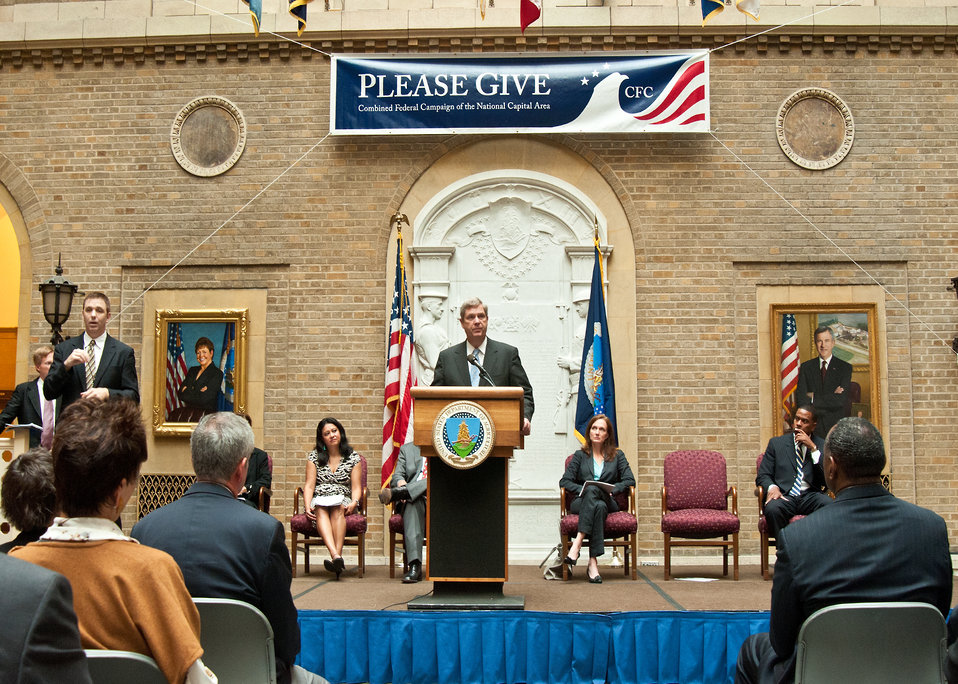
Agriculture Secretary Tom Vilsack welcomes U.S. Department of Agriculture employees to the kick-off of the USDA 2011 Combined Federal Campaign “Compassion of Individuals, Power of Community” at the USDA in Washington, DC, Wednesday, September 21, 2011. The theme of the 2011 campaign is “Celebrating 50 Years of Caring, Serving and Giving.” Behind Secretary Vilsack is a memorial to the U.S. Department of Agriculture World War One employees who lost their lives during the “Great War.” The Federal Combined Campaign exhibits represented organizations serving military personnel and their families.